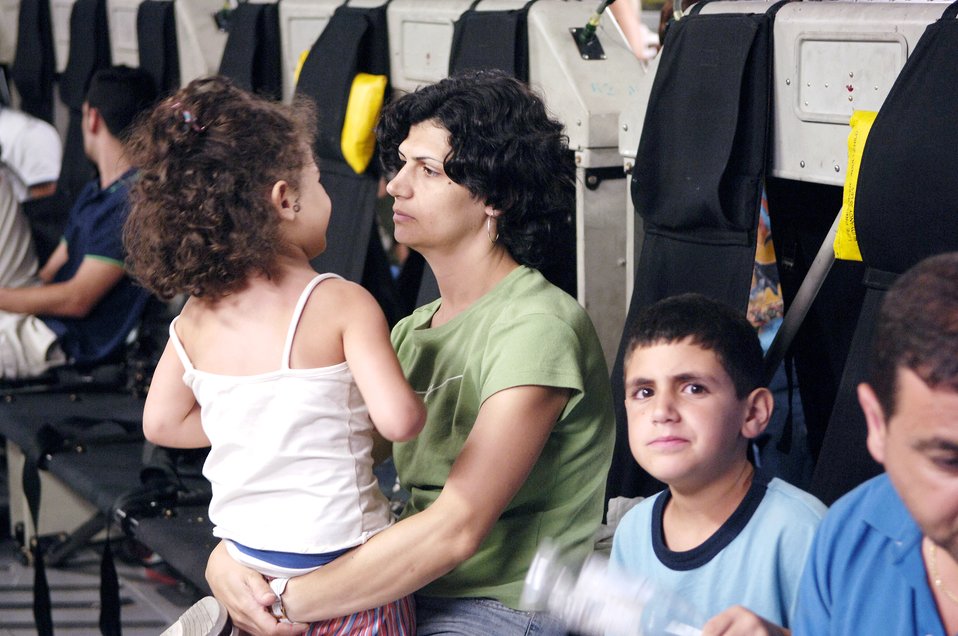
McGuire AFB provides humanitarian assistance

An American citizen from Lebanon waits to depart a C-17 Globemaster III on Monday, July 24, at McGuire Air Force Base, N.J. McGuire is providing humanitarian assistance for American citizens who are leaving Lebanon to return home after more than a week of fighting between the Israeli military and the militant group Hezbollah. More than an expected 1,000 Americans began arriving at McGuire on July 23.